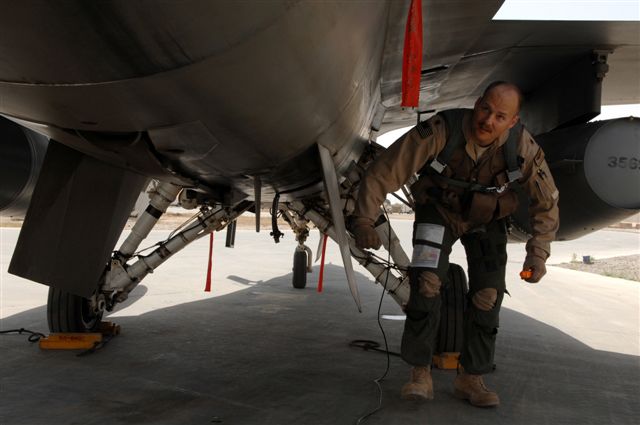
May 19 airpower summary

Maj. Dag Grantham, a 332nd Expeditionary Fighter Squadron F-16 Fighting Falcon pilot at Balad Air Base, Iraq, performs a pre-flight inspection on his aircraft prior to a mission. Part of the pre-flight inspection includes checking all maintenance panels to make sure they are closed and fuel tank caps are secured. The F-16 is a compact, multi-role fighter aircraft which is highly maneuverable and has proven itself in air-to-air combat and air-to-surface attack. Major Grantham is deployed from Luke Air Force Base, Ariz.